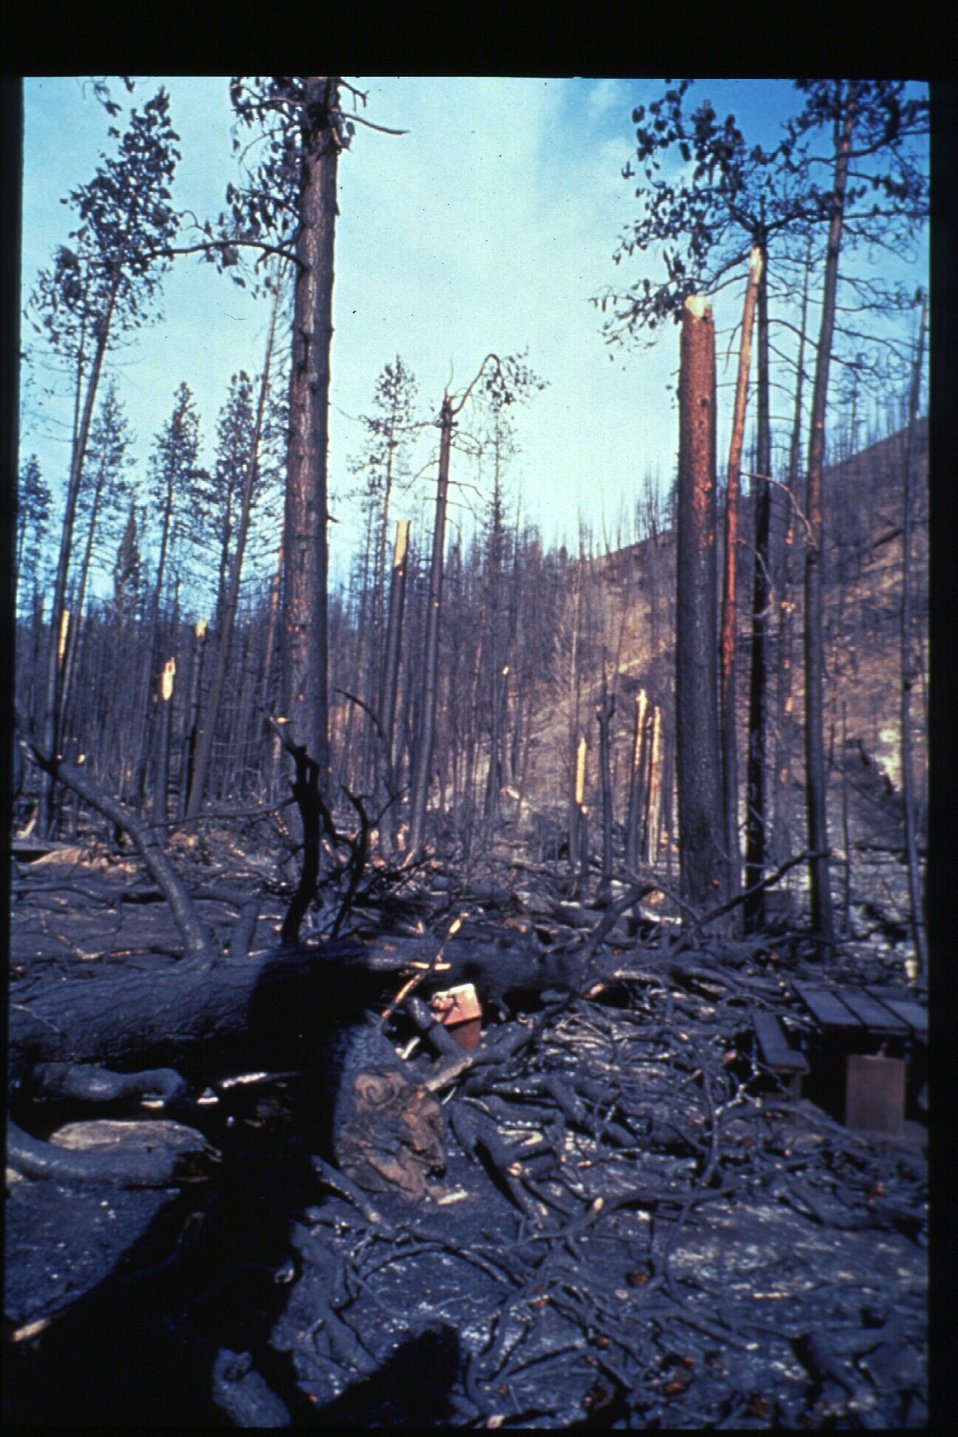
Boise Foothills Fire Danskin Mountains and South Fork of Boise River Burnt area Four River Field Office LSRD Lower Snake River District